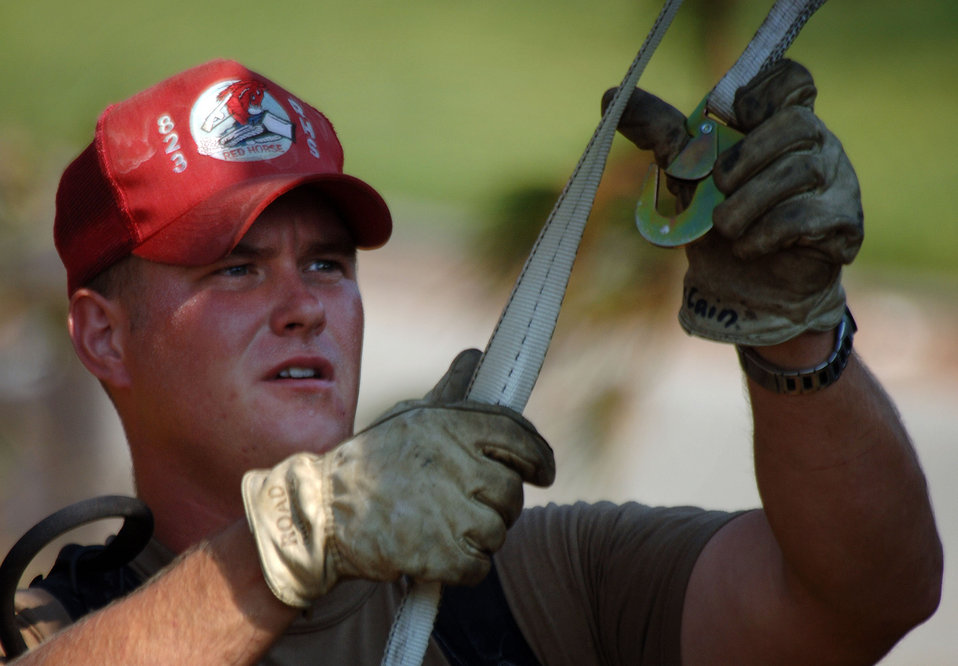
Keesler cleanup going well

KEESLER AIR FORCE BASE, Miss. -- Staff Sgt. Jamey McCain helps clear and remove fallen trees from the base housing area here. More than 90 Airmen from the 823rd Red Horse Squadron at Hurlburt Field, Fla., are deployed here to help with the base's hurricane recovery effort.